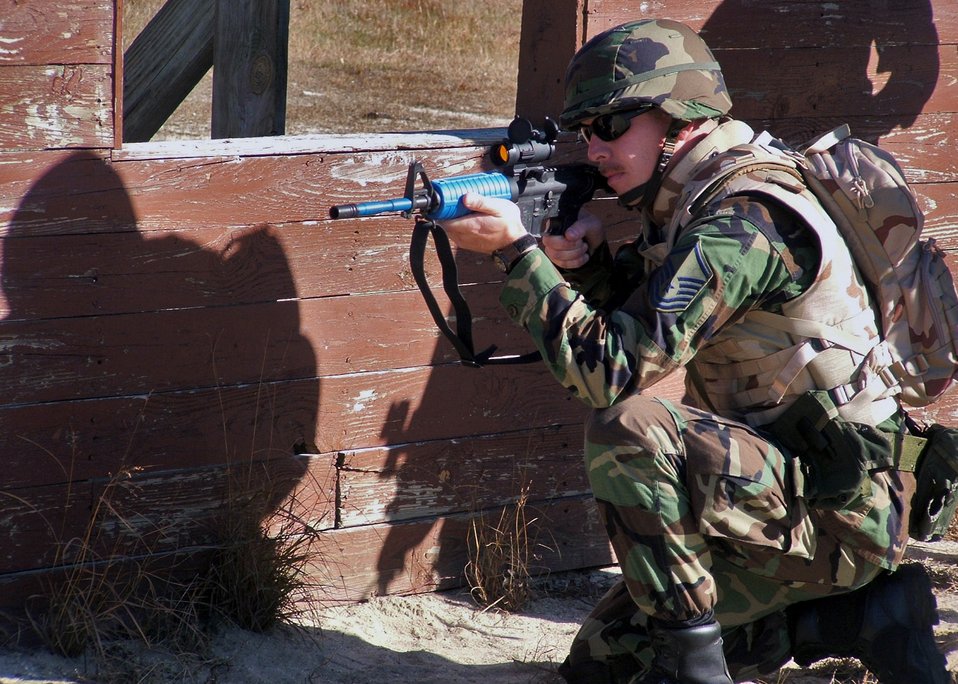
COMBAT INTERROGATOR COURSE 06-1

FORT DIX, N.J. (AFPN) -- A master sergeant participating in the Combat Interrogator Course 06-1 takes up a firing position in a close quarters battle at a tactical range. The class was taught by the 421st Combat Training Squadron at the Air Mobility Warfare Center, Fort Dix, Nov. 14.